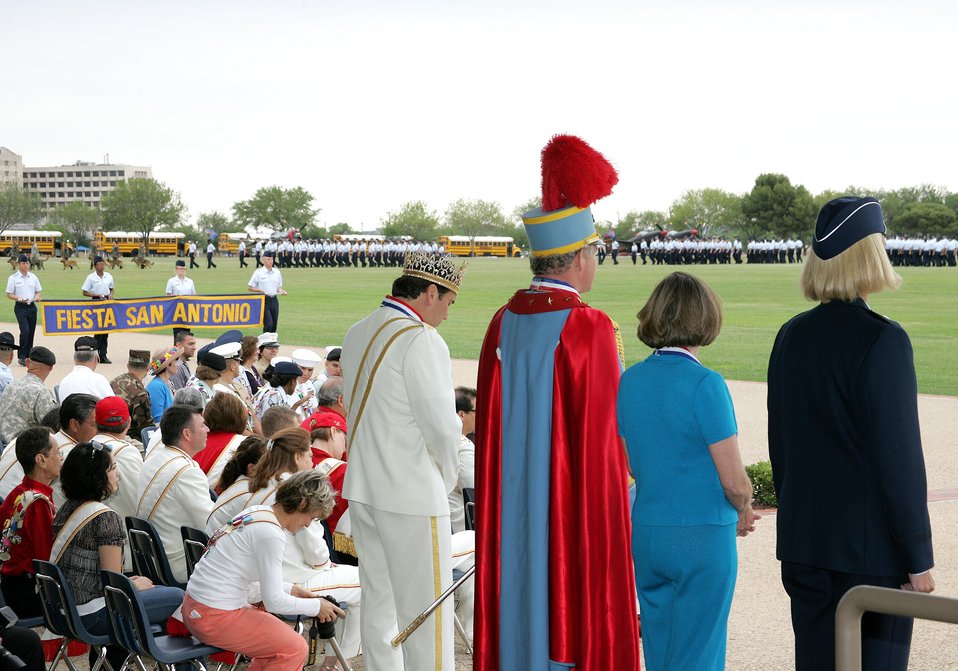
Viva Fiesta!

Fiesta royalty, including El Rey Feo, Johnny Gabriel; King Antonio LXXIV, Rick Shaw; Fiesta San Antonio Commission president, Mary West Traylor; along with Brig. Gen. Mary Kay Hertog, 37th Training Wing commander, review a parade of flights at Lackland Air Force Base, Texas, on Wednesday, April 26, 2006. The military parade was one of the many events held during Fiesta, a 10-day celebration to honor the memory of the heroes of the Alamo and the Battle of San Jacinto in 1836.